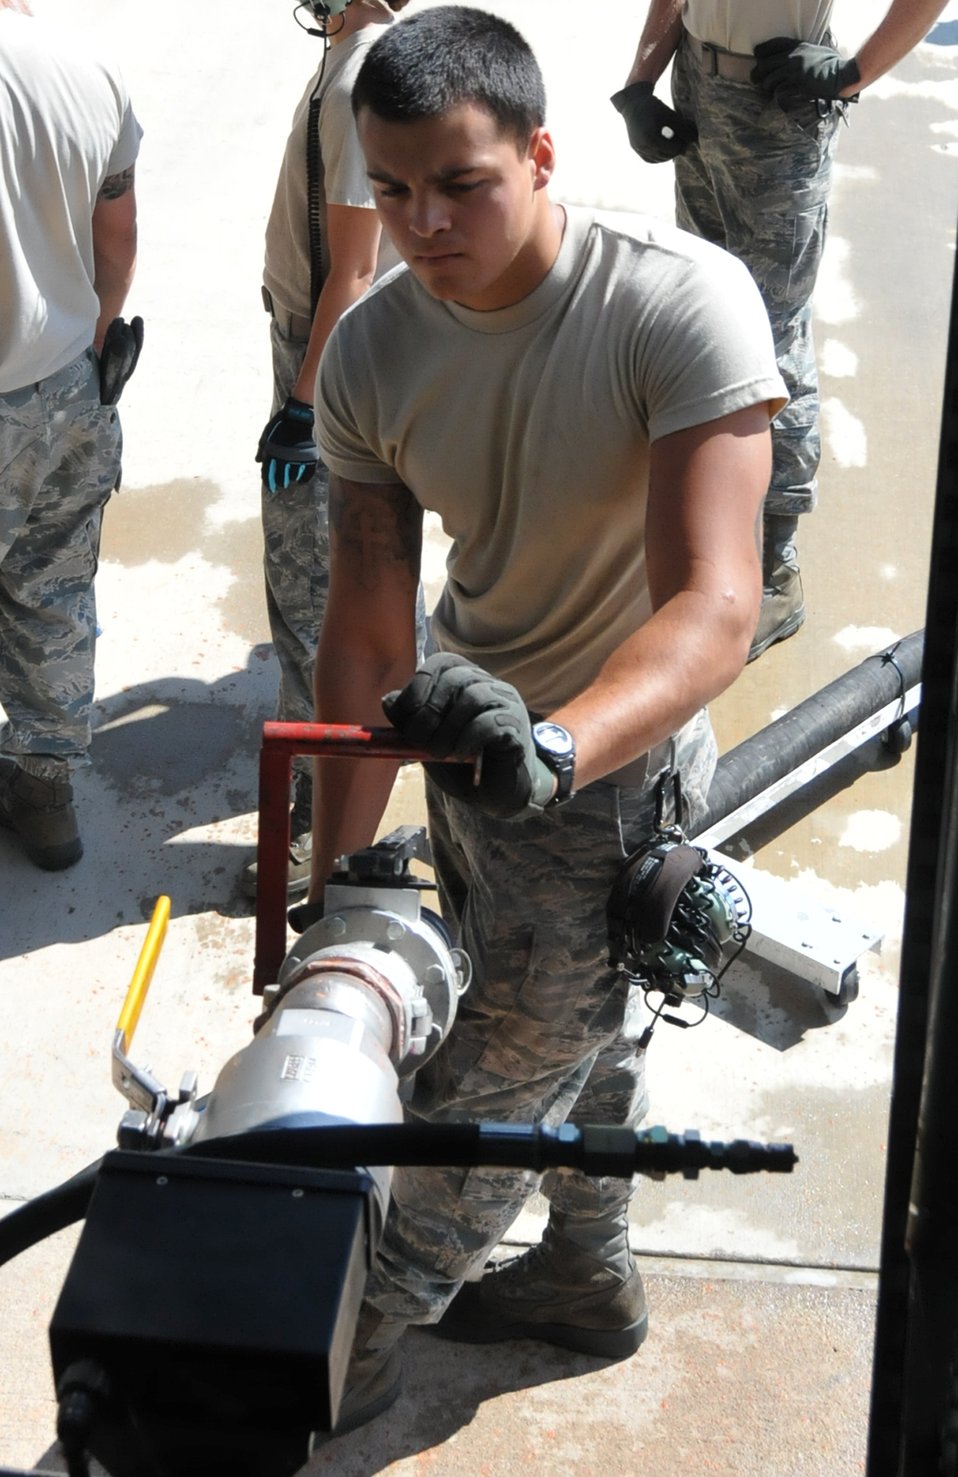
153rd Airlift Wing MAFFS

Airman 1st Class Dom Gastelum loads Phos-Chek fire retardant into a Modular Airborne Fire Fighting System-equipped C-130 Hercules at Peterson Air Force Base, Colo., on June 27, 2012. The MAFFS unit can hold up to 3,000 gallons of retardant for aerial fire-fighting efforts. Gastelum is a hydraulics systems technician assigned to the 52nd Airlift Squadron.